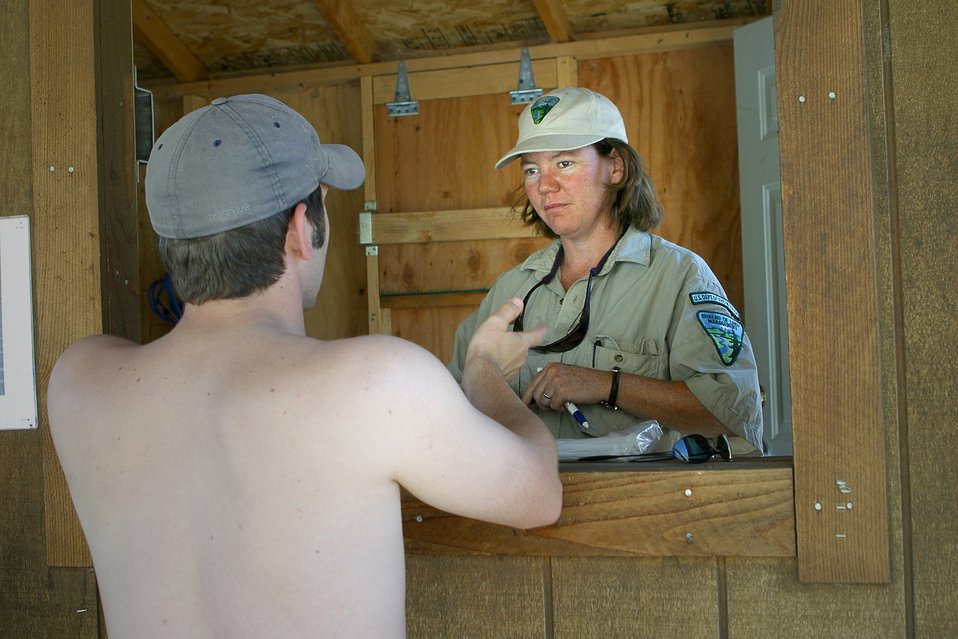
BLM River Rangers at Harphamp Flat check permits and issue boat tags while reminding users of current safety and fire regulations.